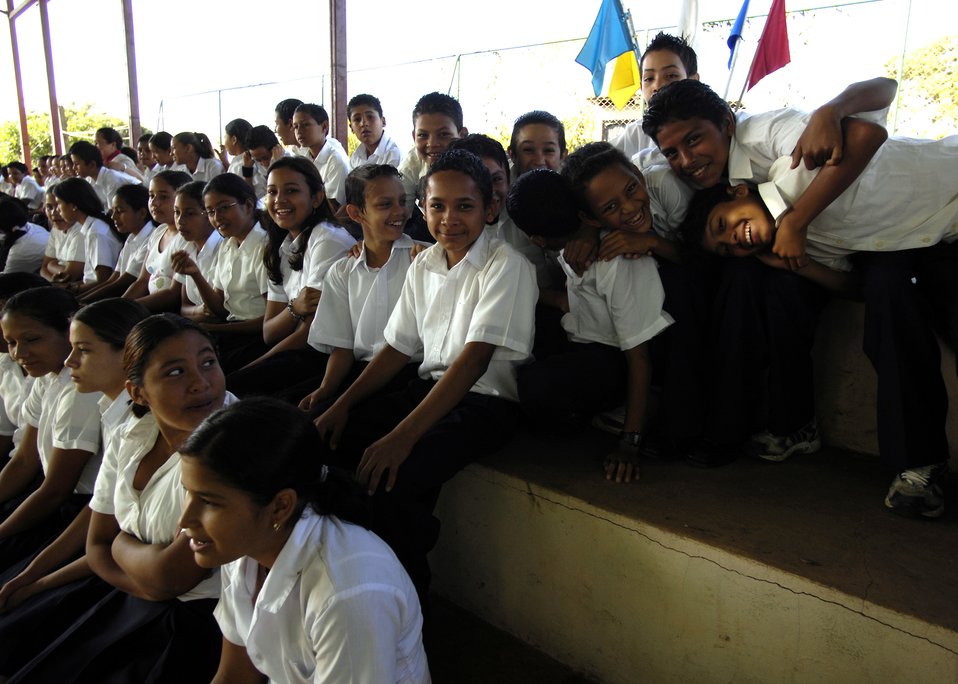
New Horizons-Nicaragua 2007

Resident school children of Santa Teresa watch as members of the 820th Expeditionary Red Horse Squadron, as well as Nicaraguan military and government officials, participate Feb. 15 in the opening ceremonies of New Horizons-Nicaragua 2007. New Horizons-Nicaragua 2007 is a $7.25 million United States and Nicaraguan military humanitarian and training exercise that is providing a new school and medical clinic to the Nicaraguan people. U.S. military members will also administer free health to Nicaraguans and free veterinary care to animals.